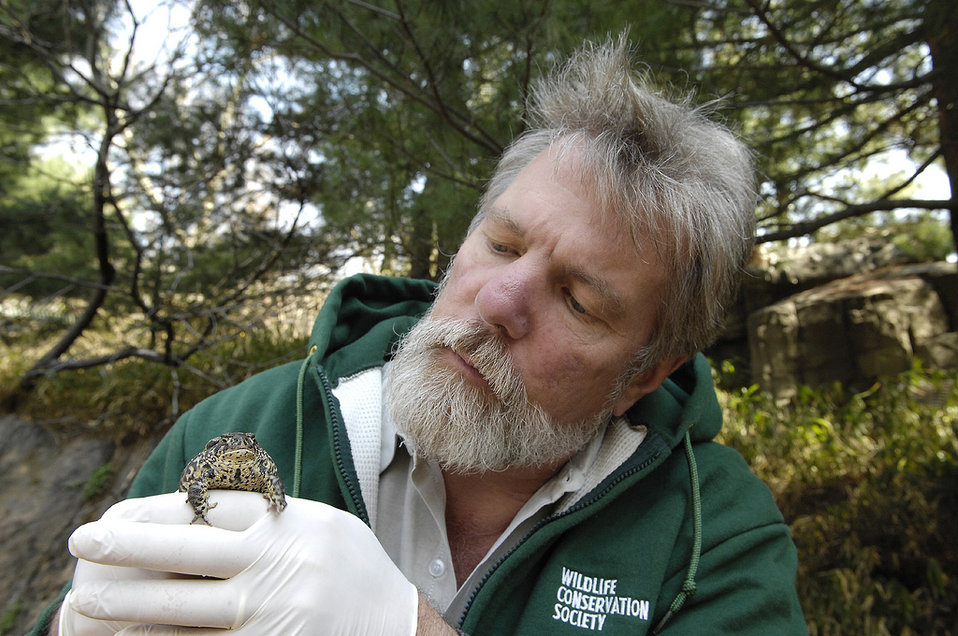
JLM1834 bruce foster wyoming toad 4 11 07

Uploaded for Flickr member Julie Larsen Maher

New York

Bruce Foster, Wildlife Conservation Society's Collections Manager at Central Park Zoo, is working to save the critically endangered Wyoming toad, thought to be extinct in the wild. Through a successful breeding program in New York, there is now a small population of the toads found outside of Laramie, Wyoming, a result of a joint reintroduction program lead by the USFWS and supported by AZA Zoos.